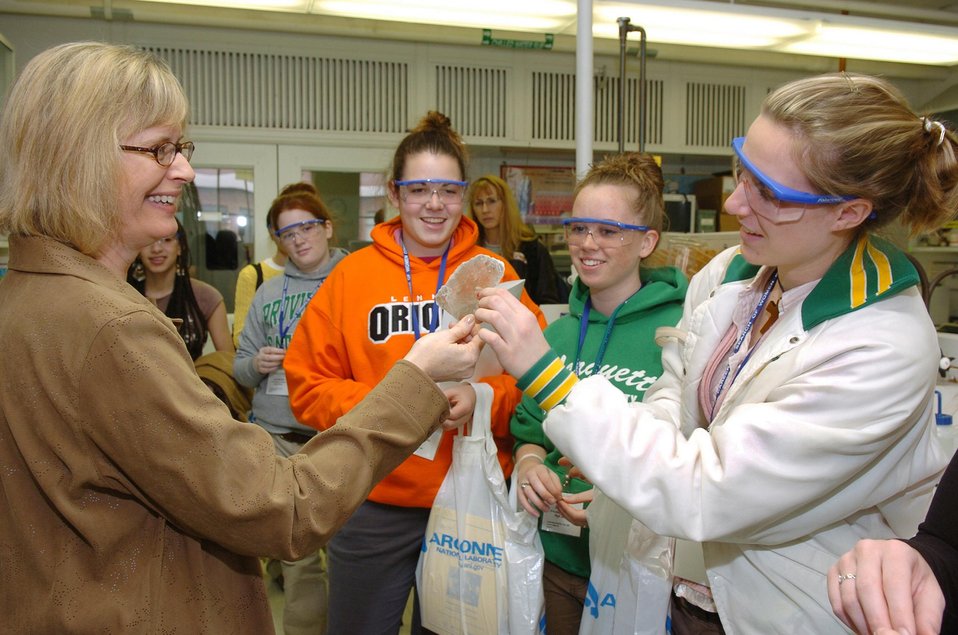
Researcher talks to students attending Argonne National Laboratory's Annual Science Career in Search of Women Conference.

About 350 students from nearly 60 schools throughout the Chicago area will participate in the day-long conference. The goal is to encourage high school women to consider a career in science and technology. Science Careers in Search of Women puts students with scientists in various fields and provides an opportunity to spent the day interacting with positive female role models. Students participate in panel discussions with speakers from various scientific and engineering disciplines. The students also tour several labs at ANL including biology, chemistry, physics, computer science and engineering, as well as visit career booth exhibits.